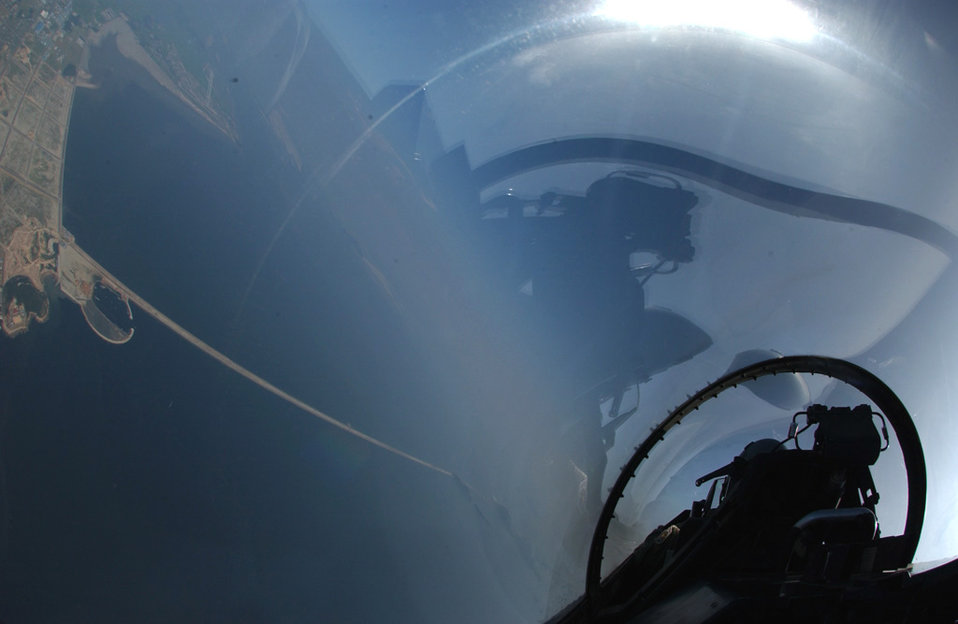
Live air-to-air missiles fired first time in Korea

An F-16 Fighting Falcon from Kunsan Air Base, South Korea, flies toward a military operating area on Aug. 16. Pilots from Kunsan employed AIM-9 Sidewinder missiles on Aug. 16 for the first time in the history of 7th Air Force in Korea.